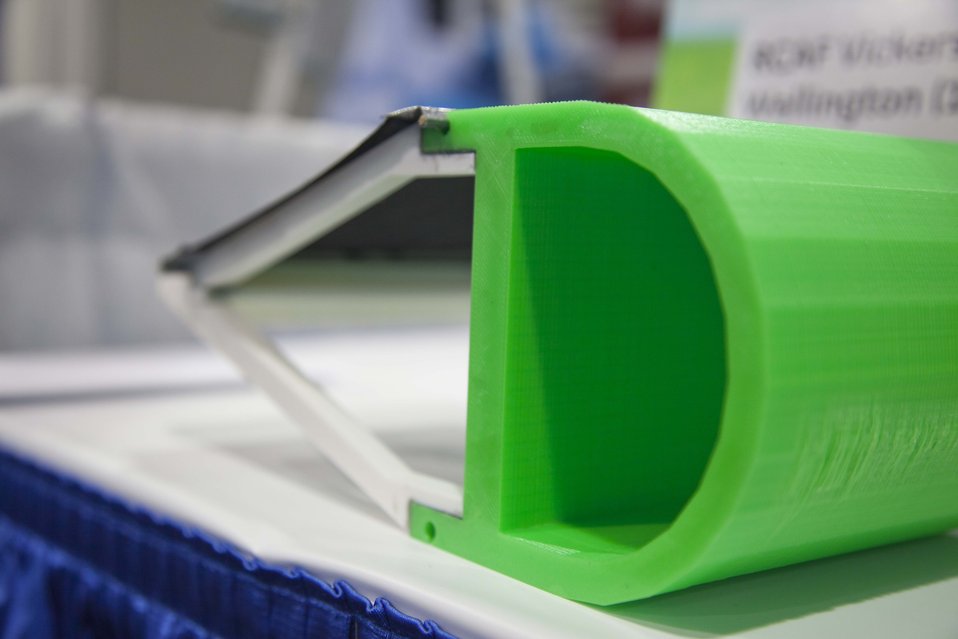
Pictured here is a fabric-based wind turbine blade designed by GE Power and Water in partnership with the National Renewable Energy Laboratory and Virginia Tech. Conventional wind turbines use rigid fiberglass blades that can be difficult to manufacture and transport. This ARPA-E supported project uses tensioned fabric as part of its blade design offering a lighter, lower-cost turbine compared to current clamshell fiberglass blade designs.